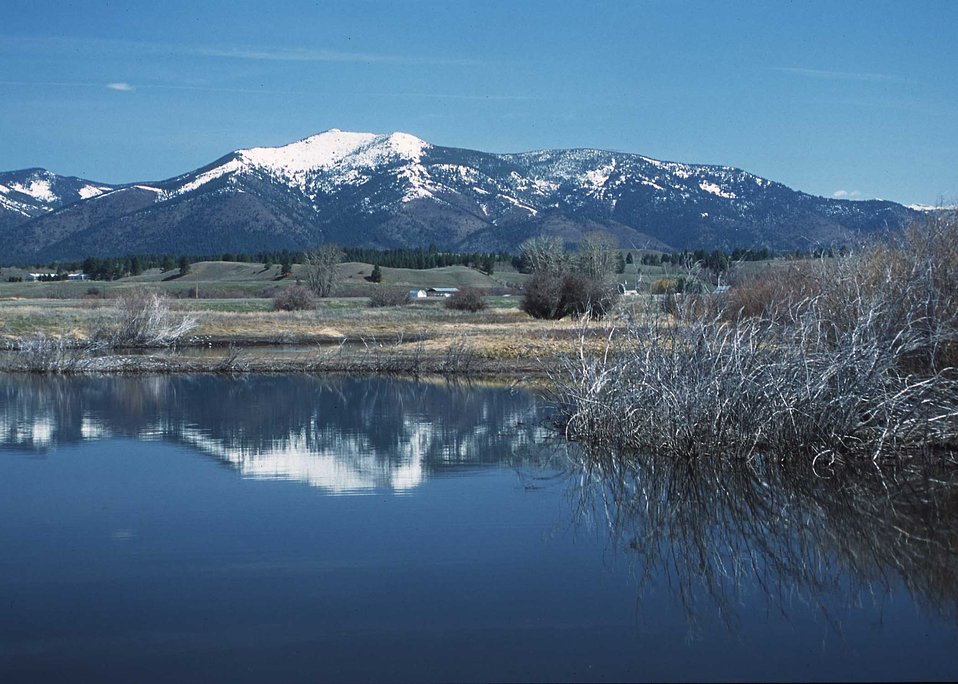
Scenic wetland in northcentral Montana.